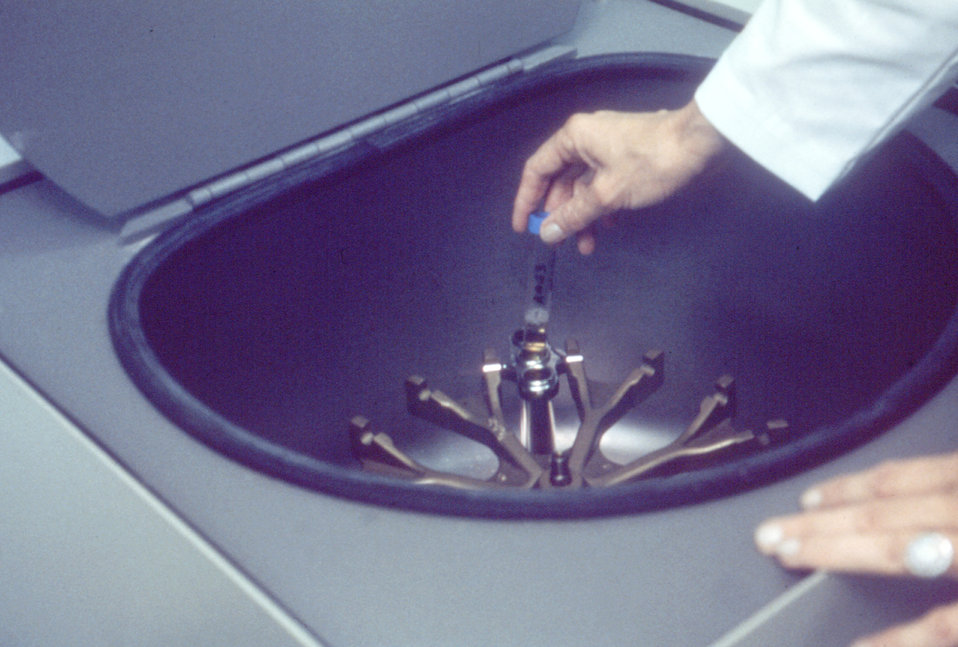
Here amniotic fluid is about to undergo centrifugation in preparation for microvillar enzyme analysis.